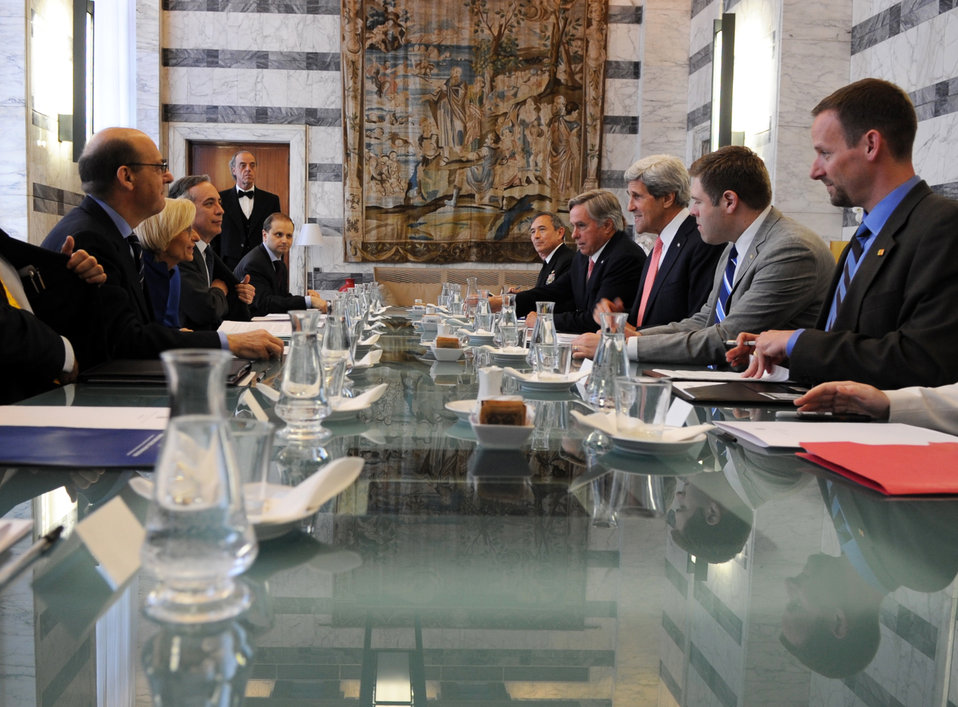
Secretary Kerry Meets With Italian Foreign Minister Bonino

U.S. Secretary of State John Kerry meets with Italian Foreign Minister Emma Bonino in Rome, Italy, on May 9, 2013.